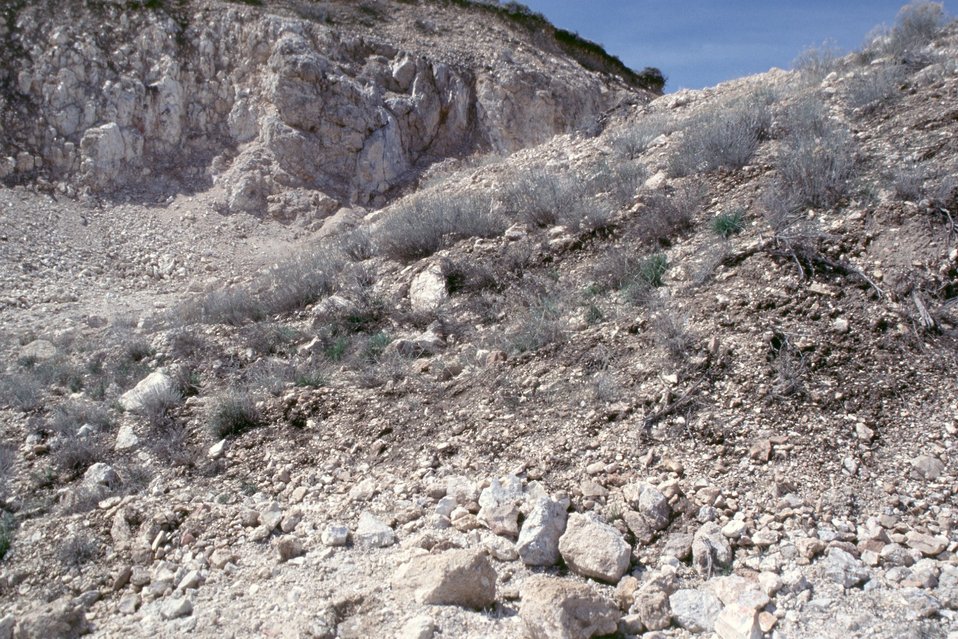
AML Glass Buttes, G3, Burns District Bluebunch wheatgrass seeds readily grows where seeds were spread after backfilling two abandoned mine shafts in 1999.